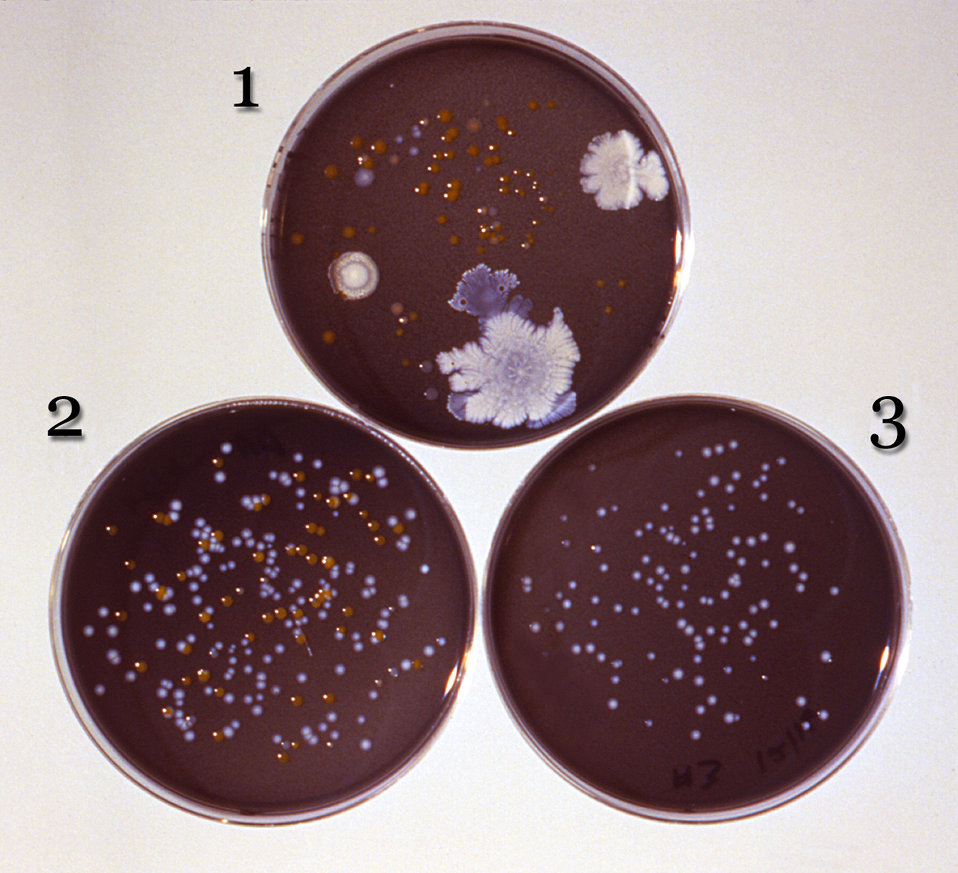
These three agar plates were used to isolate Legionella sp. bacteria from a patient, or his environment. All three plates were inoculated with the same water sample, but the agar mixtures differ in their chemical makeup.